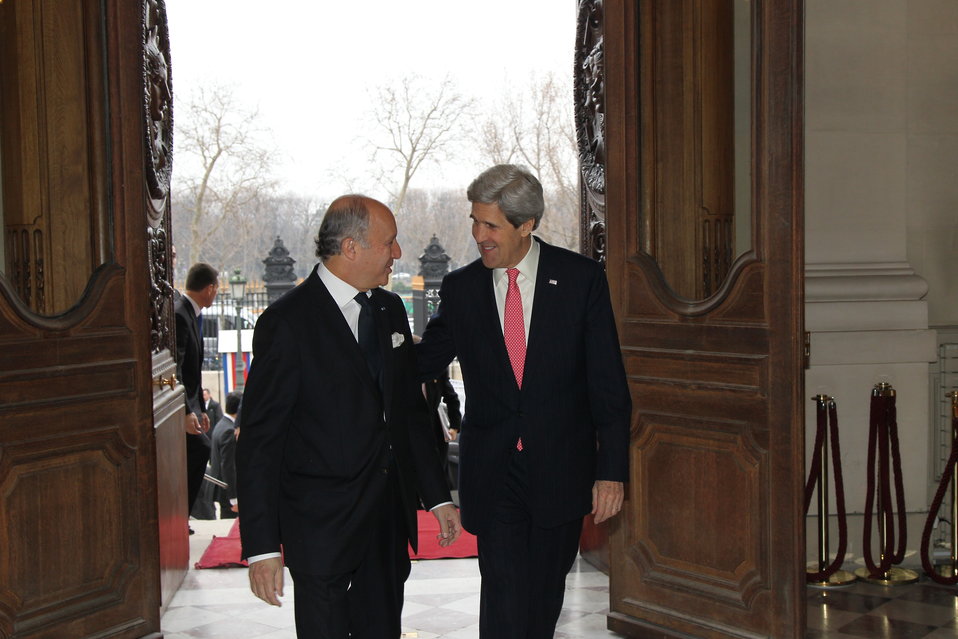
Secretary Kerry Meets With French Foreign Minister Fabius

U.S. Secretary of State John Kerry meets with French Foreign Minister Laurent Fabius in Paris, France on March 27, 2013.